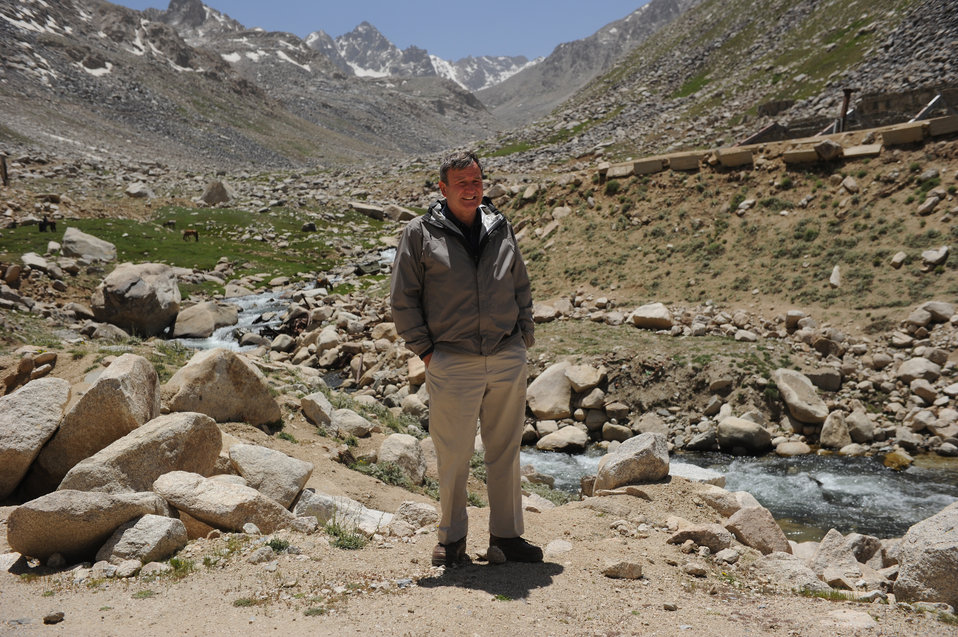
U.S. Ambassador Karl W. Eikenberry near the North entrance of the Salang Tunnel on the border of Parwan and Baghlan Provinces, Afghanistan, on Wednesday, June 15, 2011. (S.K.Vemmer/Department of State)